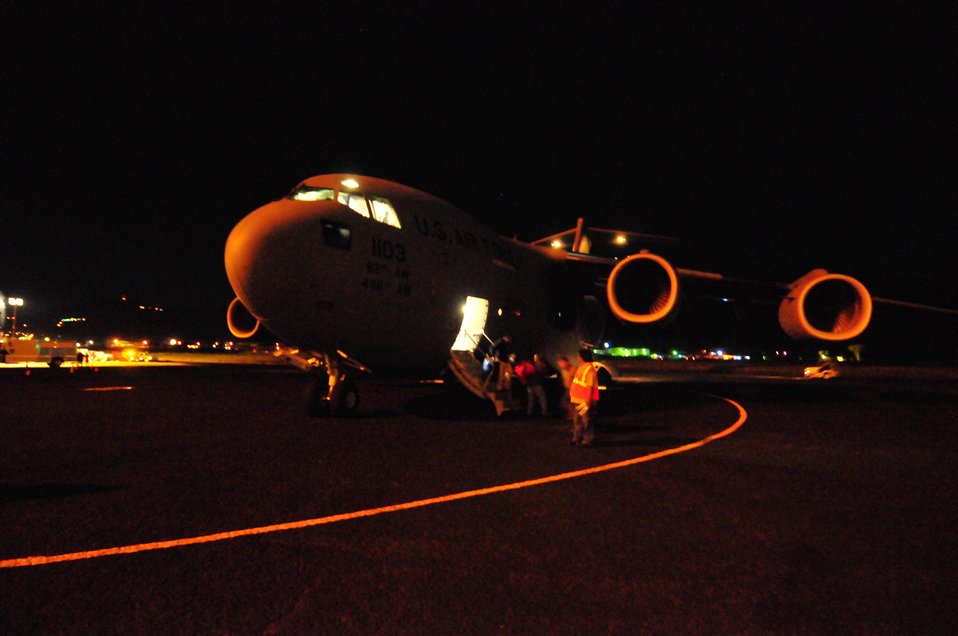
Relief efforts

Federal Emergency Management Agency officials depart a C-17 Globemaster III from McChord Air Force Base, Wash., after arriving in Pago Pago, American Samoa, on Oct. 1, 2009. The mission was McChord's first airlift to the Samoan Islands in support of humanitarian relief efforts following the Sept. 29 tsunami.